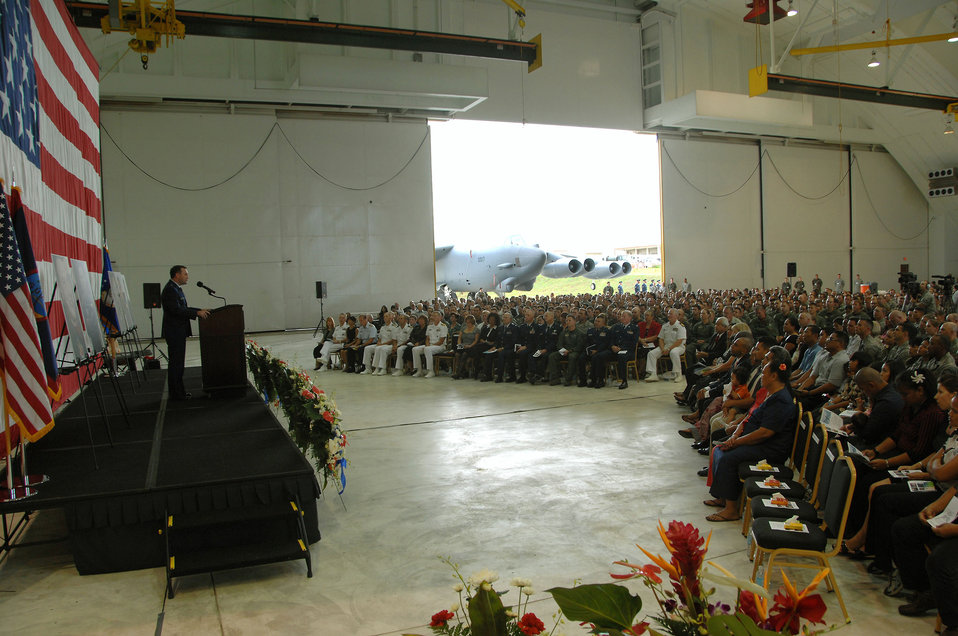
Raider 21 crew remembered

Brig. Gen. Doug Owens, 36th Wing commander, delivers a heartfelt message to more than 1,800 guests who attended a memorial ceremony July 25 at Andersen's Hangar One. The ceremony honored the six Airmen who died when their B-52 crashed July 21, 25 miles off the coast of Guam. Their mission was to flyover Guam's Liberation Day parade celebrating the island's liberation from Japanese occupation in World War II.